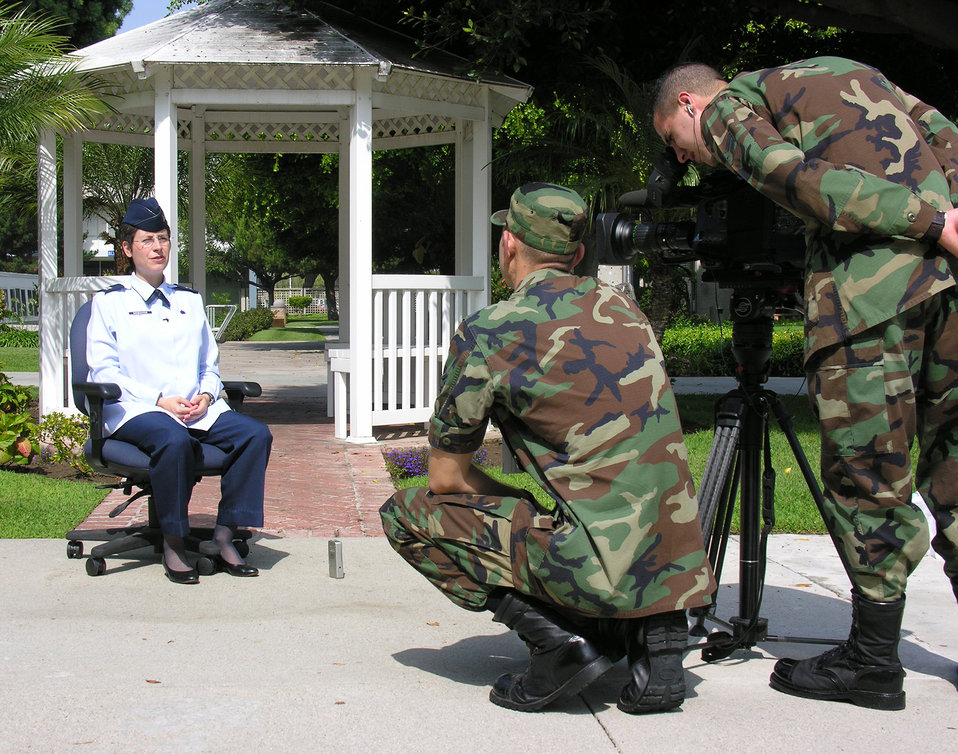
Iraqi, AF C-130 crew flies boy to receive heart surgery

ALI BASE, Iraq -- Baher, 8, sits next to his mom, Afaf, here aboard an Iraqi C-130 Hercules as they prepare to complete the first leg of their journey to New Orleans where he will receive heart surgery as part of the Operation Mend a Heart program.